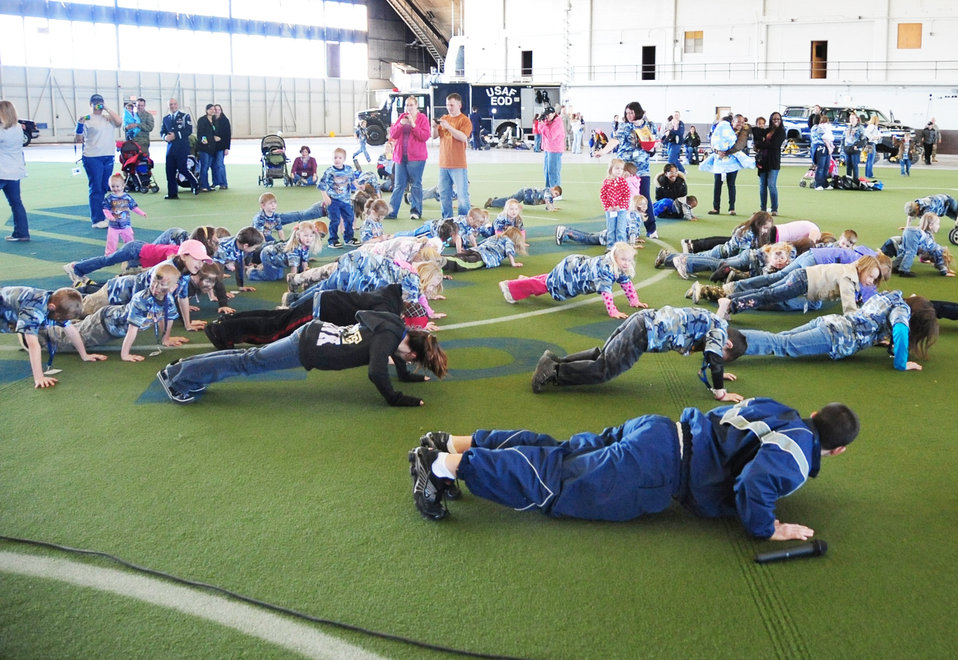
Ellsworth Airmen give children taste of deployment process

Children of base Airmen do push-ups for a physical training demonstration during Kids, Spouses and Teachers Understanding Deployment Operations event March 13, 2010, at Ellsworth Air Force Base, S.D. Senior Airman Zachary Christy, 28th Force Support Squadron food services specialist, teaches the children how to do a proper push-up.